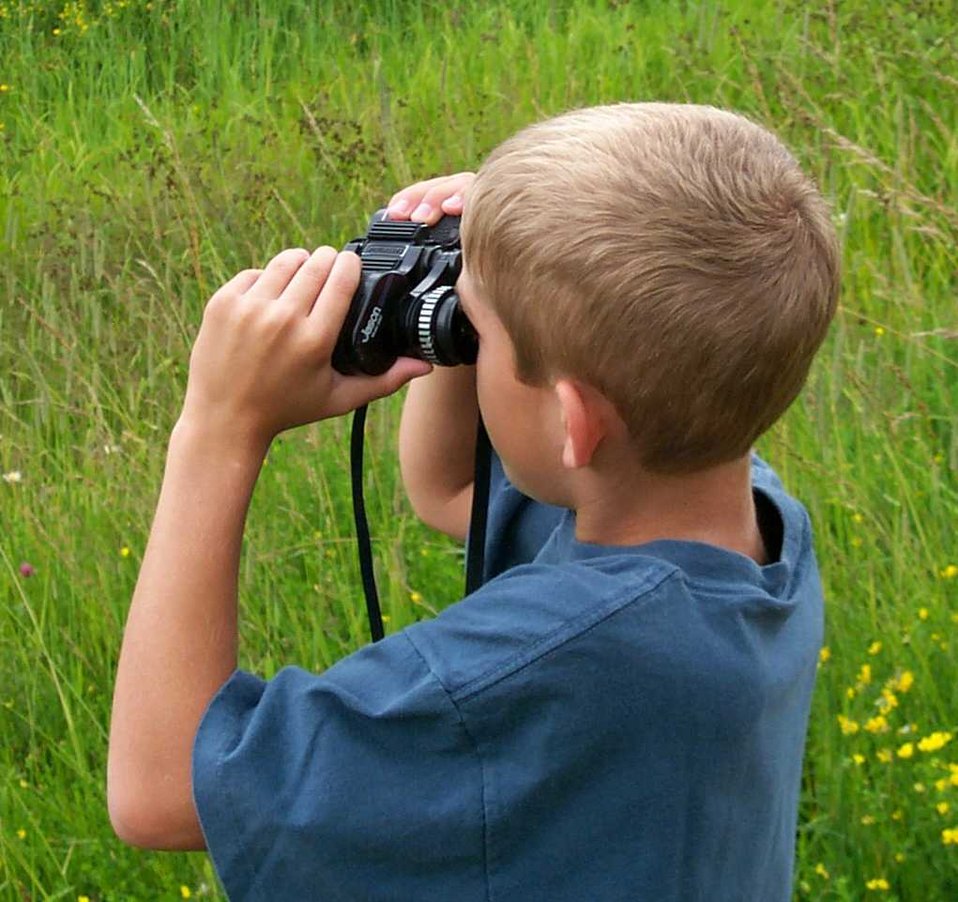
wildlife-viewing

Unplug and take your kids outside, where they can view the world though a different lens, away from televisions, cell phones, and other electronic gadgets. Grab a pair of binoculars and see how many different species of birds they can find. Photo provided by U.S. Forest Service.